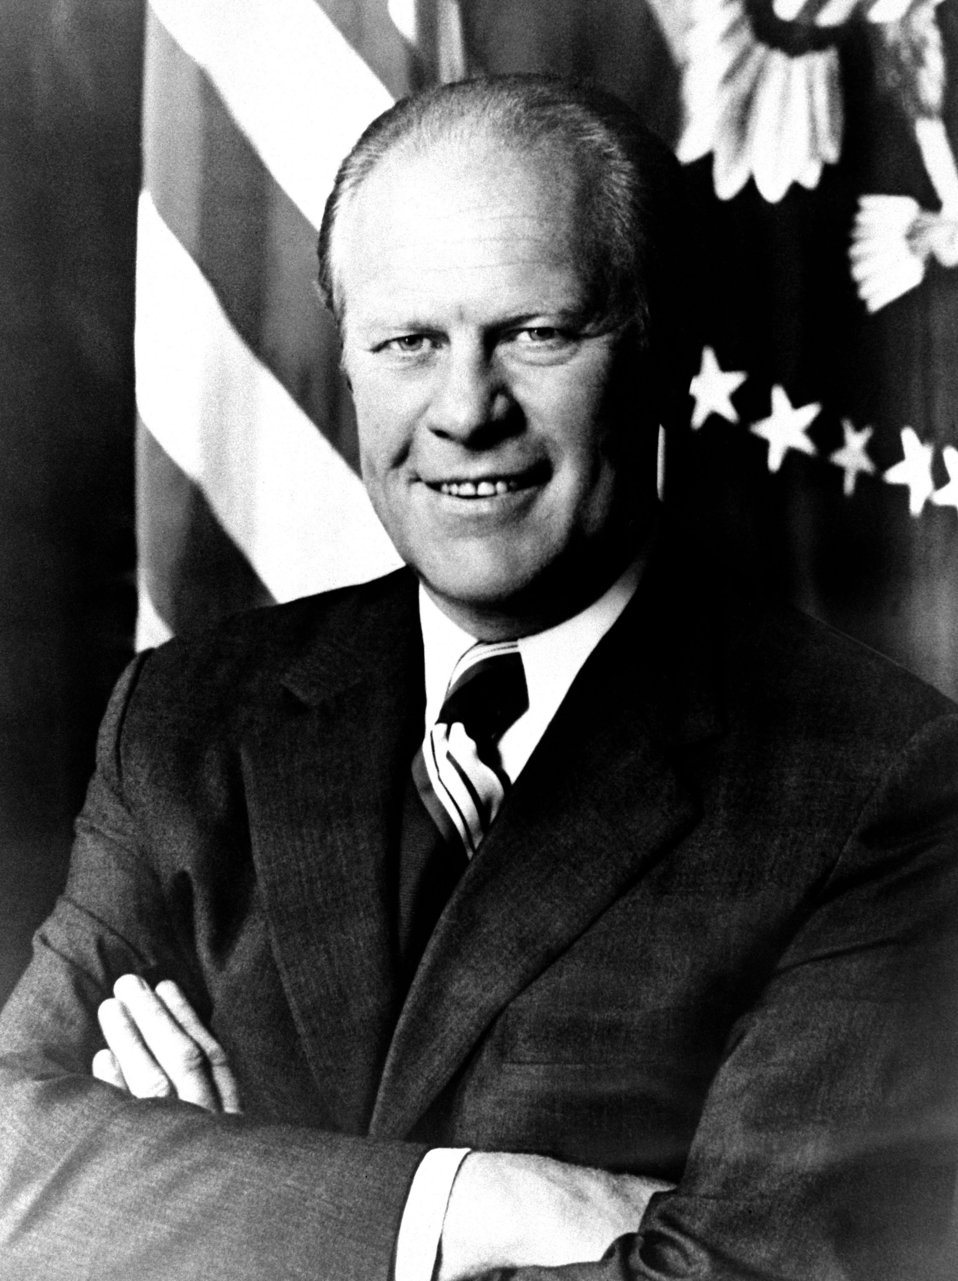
Ford remembrance

Portrait of President Gerald R. Ford. Former President Gerald R. Ford died Dec. 26 at the age of 93. He was the 38th President of the United States.